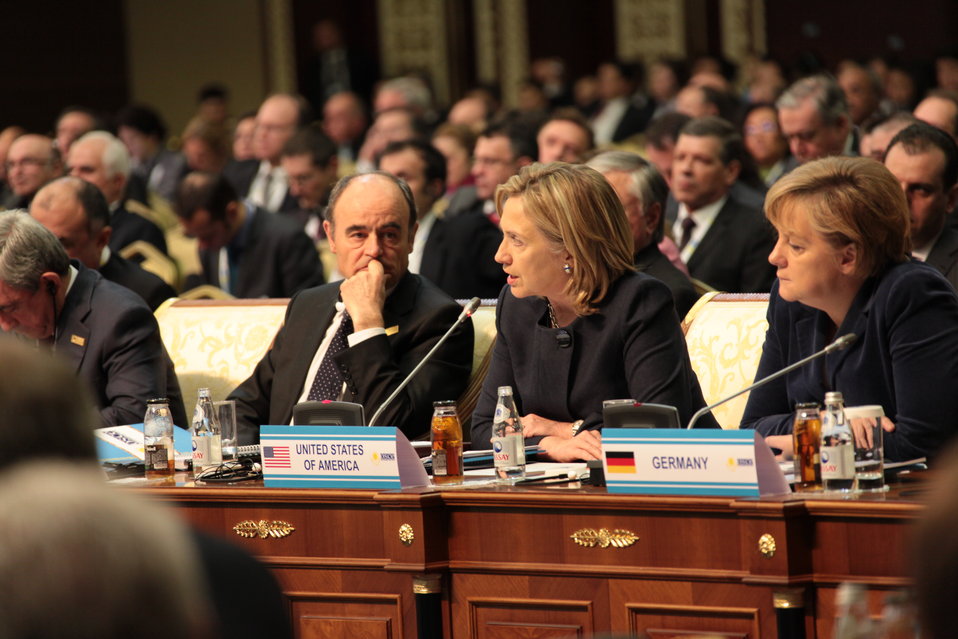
Secretary Clinton Delivers Plenary Remarks

U.S. Secretary Hillary Rodham Clinton delivers plenary remarks at the 2010 OSCE Summit in Astana, Kazakhstan, on December 1, 2010.